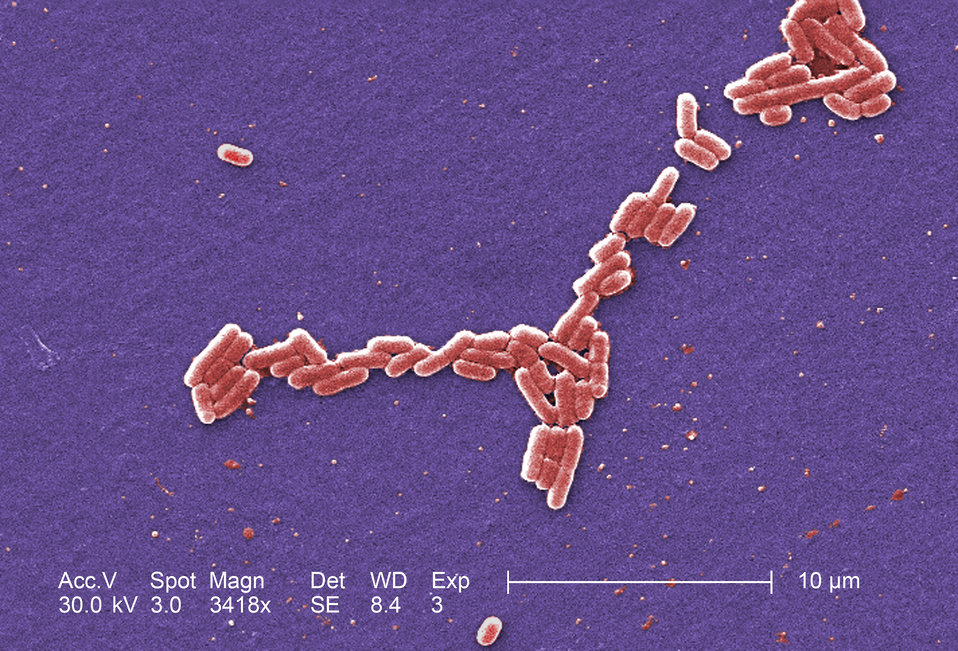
Under a magnification of 3418x, this colorized scanning electron micrograph (SEM) depicted a number of Gram-negative Escherichia coli bacteria of the strain O157:H7. E. coli O157:H7 is one of hundreds of strains of this bacterium. Although most strains are harmless, and live in the intestines of healthy humans and animals, this strain produces a powerful toxin, which can cause severe illness.E. coli O157:H7 was first recognized as a cause of illness in 1982 during an outbreak of severe bloody diarrhea; the outbreak was traced to contaminated hamburgers. Since then, most infections have come from eating undercooked ground beef.The combination of letters and numbers in the name of the bacterium refers to the specific markers found on its surface, which distinguishes it from other types of E. coli. See PHIL 8798 for a black and white version of this image.